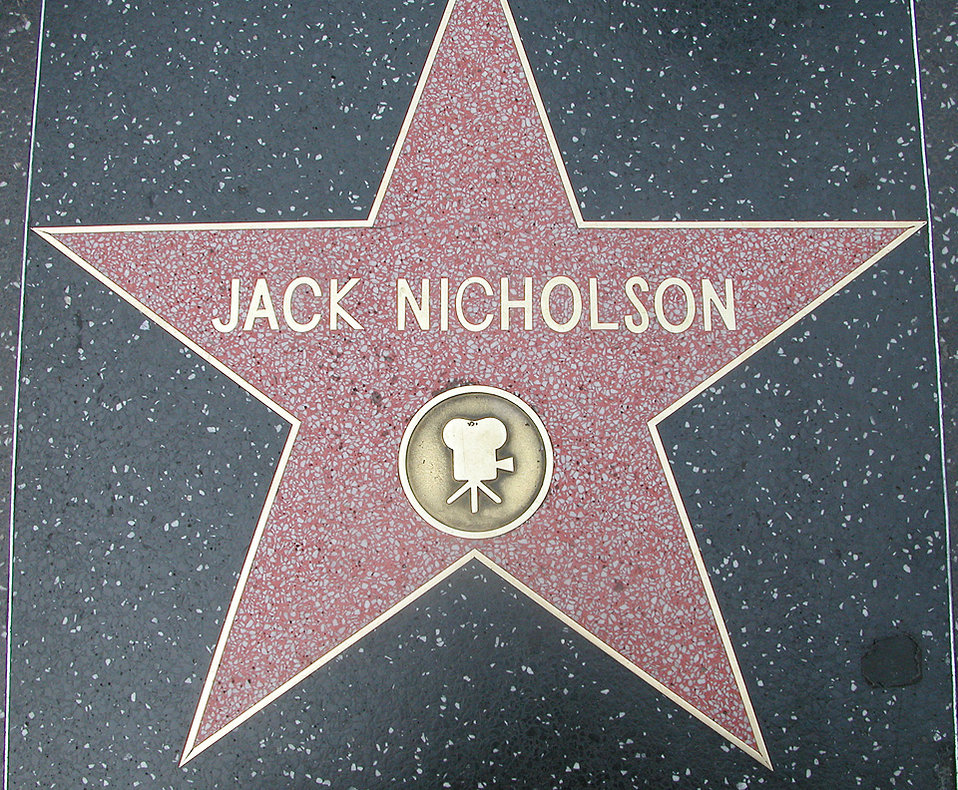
Italiano: Stella di Jack Nicholson sulla Hollywood Walk of Fame, Los Angeles (California) Jack Nicholson's star on the Hollywood Walk of Fame, Los Angeles (California)